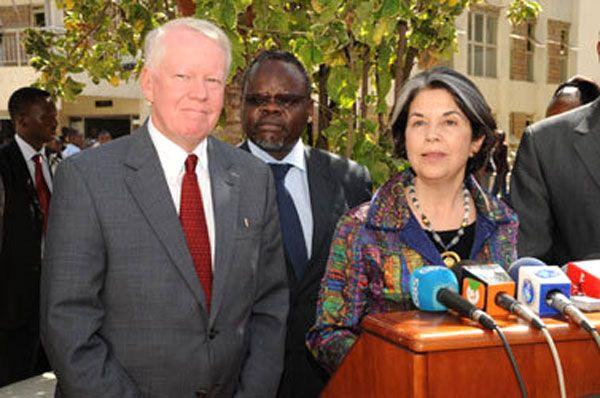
Under Secretary Otero and Ambassador Ranneberger Visit Memorial Park

Under Secretary of State for Democracy and Global Affairs Maria Otero and U.S. Ambassador to Kenya Michael E. Ranneberger visit the Memorial Park commemorating the bombing of the U.S. Embassy in Nairobi in the 1990s in Kenya, January 28, 2010.